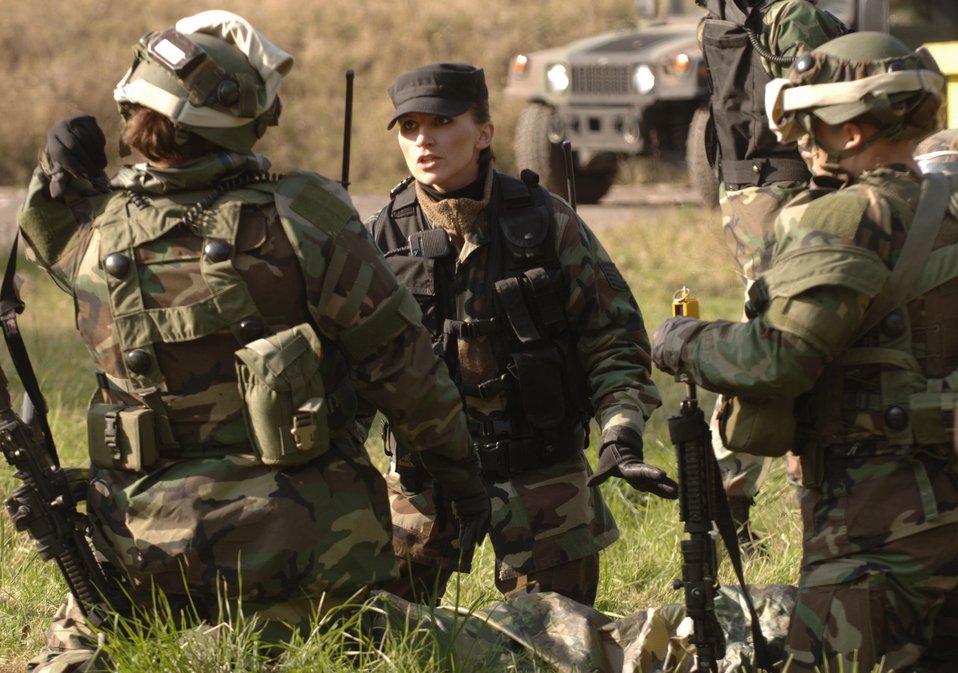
Creek Defender

During a two-week pre-deployment integrated base defense course, known as Creek Defender, Tech. Sgt. Janee Walker briefs security forces members Oct. 23 on the aftermath of a convoy patrol scenario on Baumholder U.S. Army Garrison in southern Germany. Sergeant Walker is an instructor and one of 22 people assigned to the 786th Security Forces Squadron's regional training center at Sembach Air Base, Germany, where 800 to 1,000 students are trained each year.